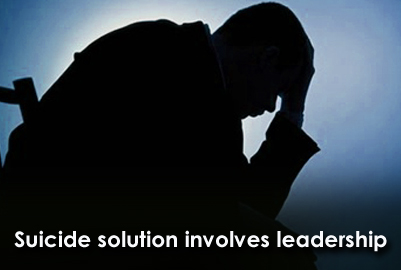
Suicide solution involves leadership